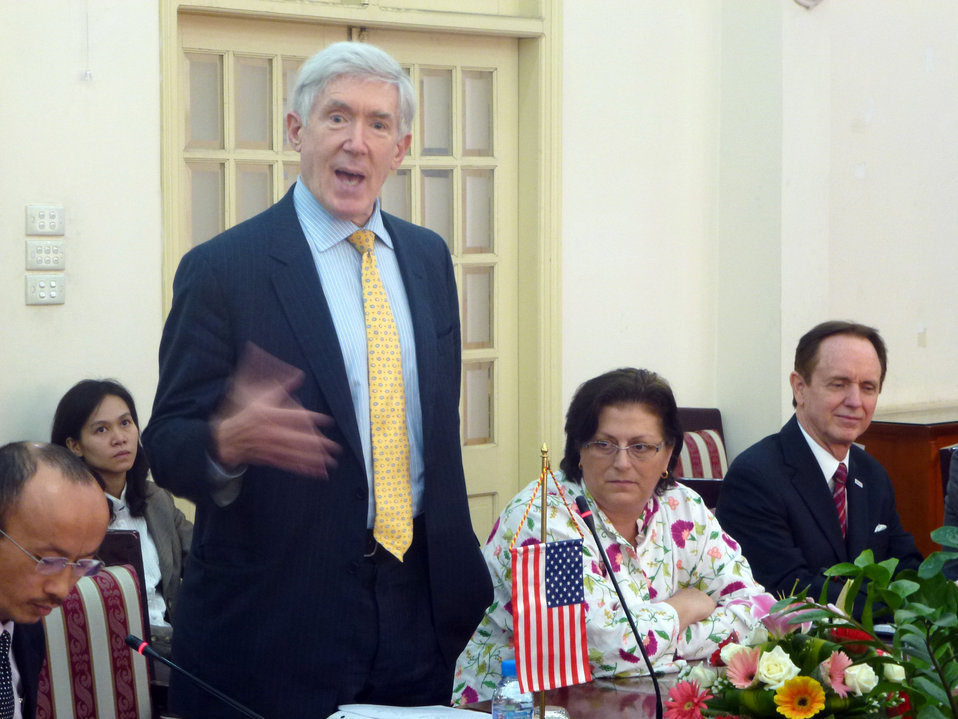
U.S. Under Secretary of State Robert Hormats